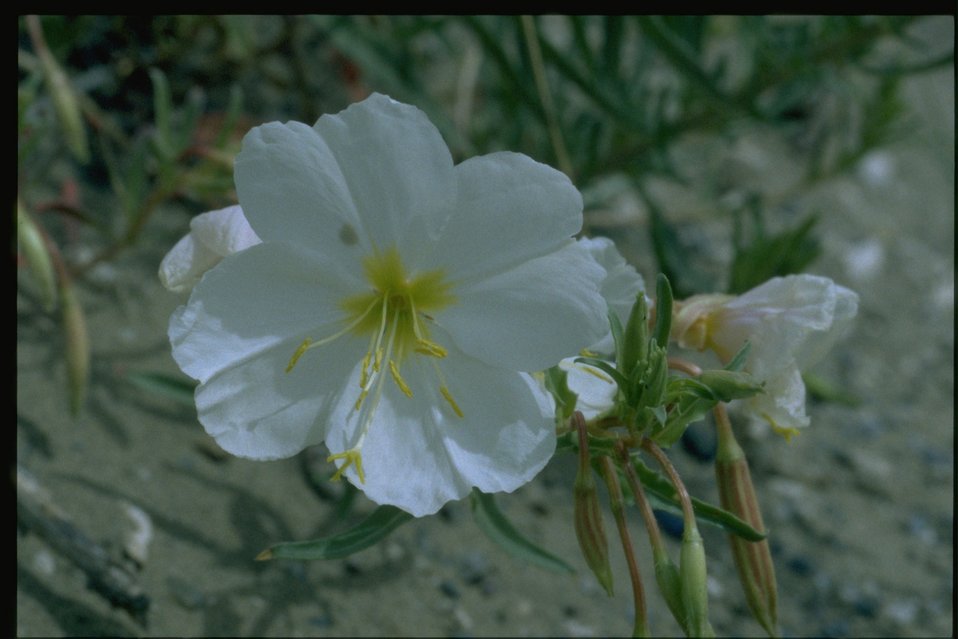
Closeup shot of Primrose wildflower.